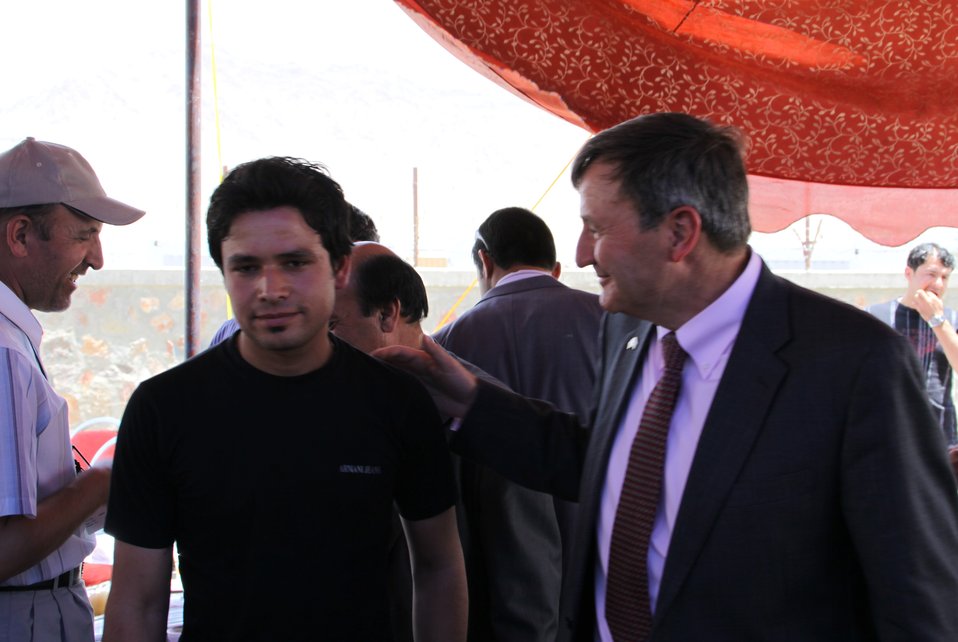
105 MW Tarakhil Power Plant Handover